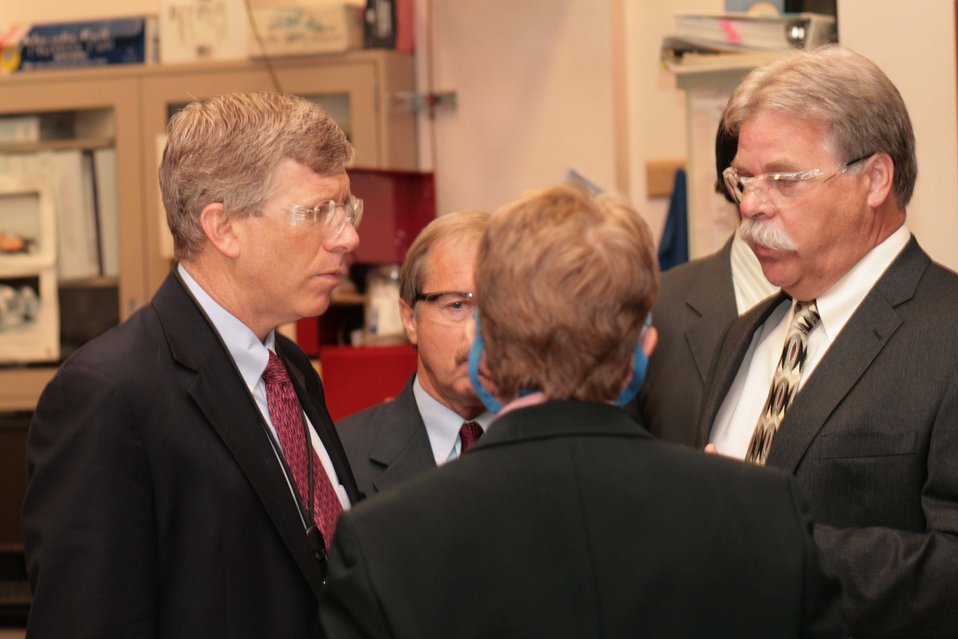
P-7